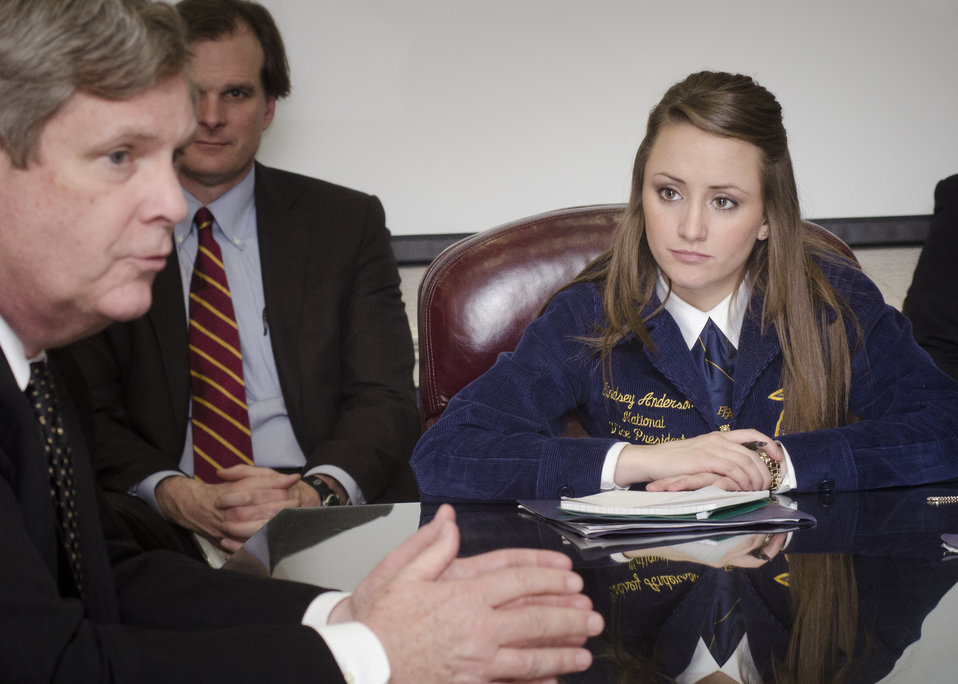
Agriculture Secretary Tom Vilsack talks to FFA Natinal officers in the Wallace room at the U.S. Department of Agriculture (USDA) in Washington, D.C., on Wednesday, Jan. 13, 2013.